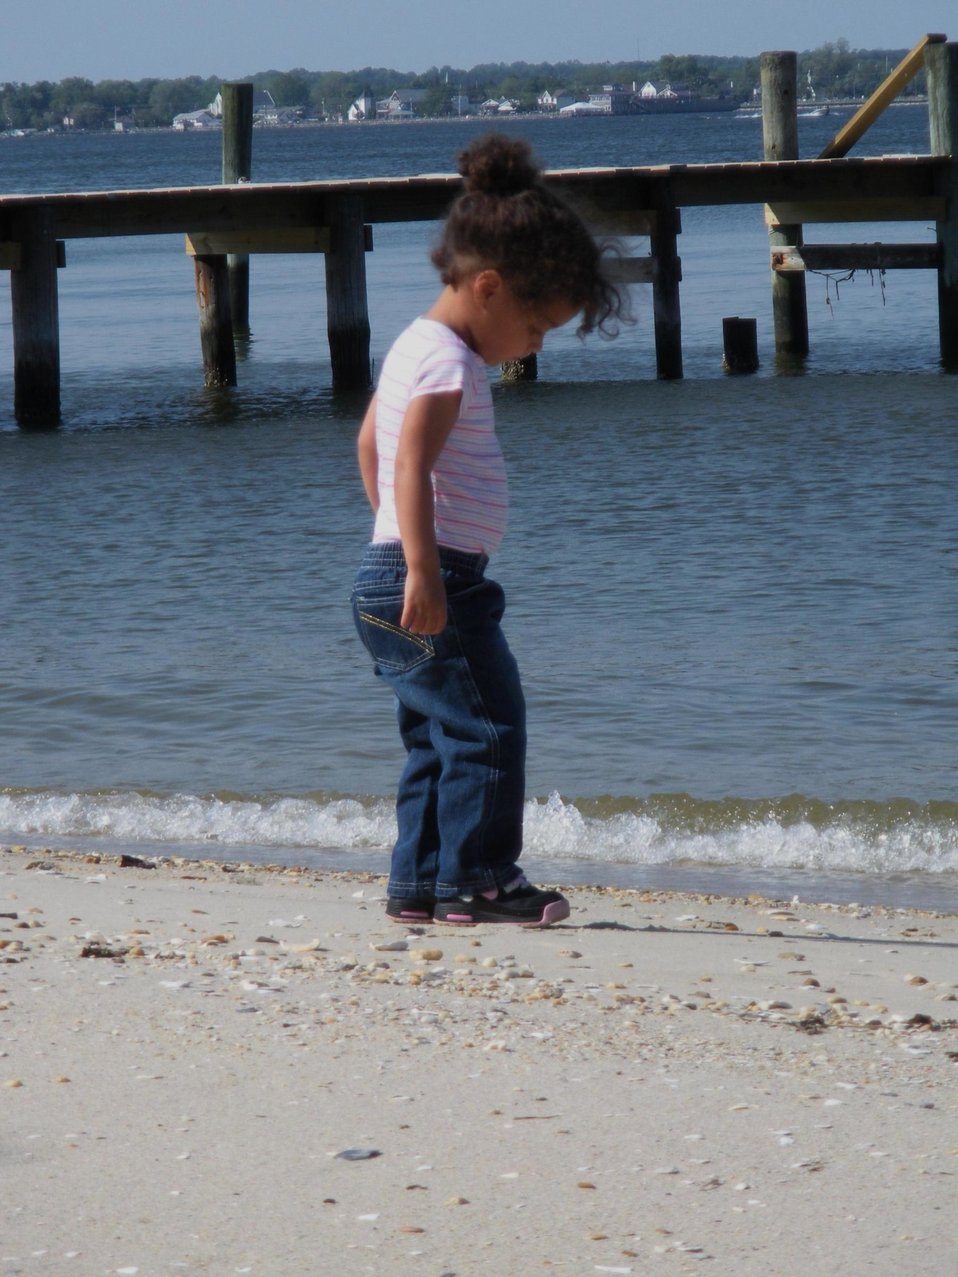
A young beachcomber looking for treasure.